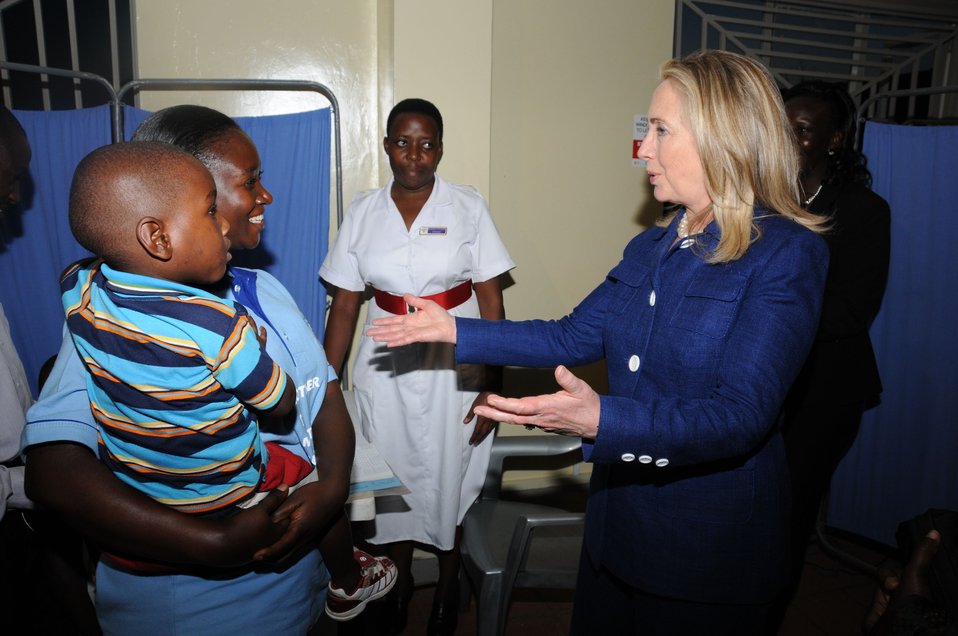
Secretary Clinton Speaks With a Mother

U.S. Secretary of State Hillary Rodham Clinton speaks with a mother at the Reach Out Mbuya Clinic in Kampala, Uganda on August 3, 2012.